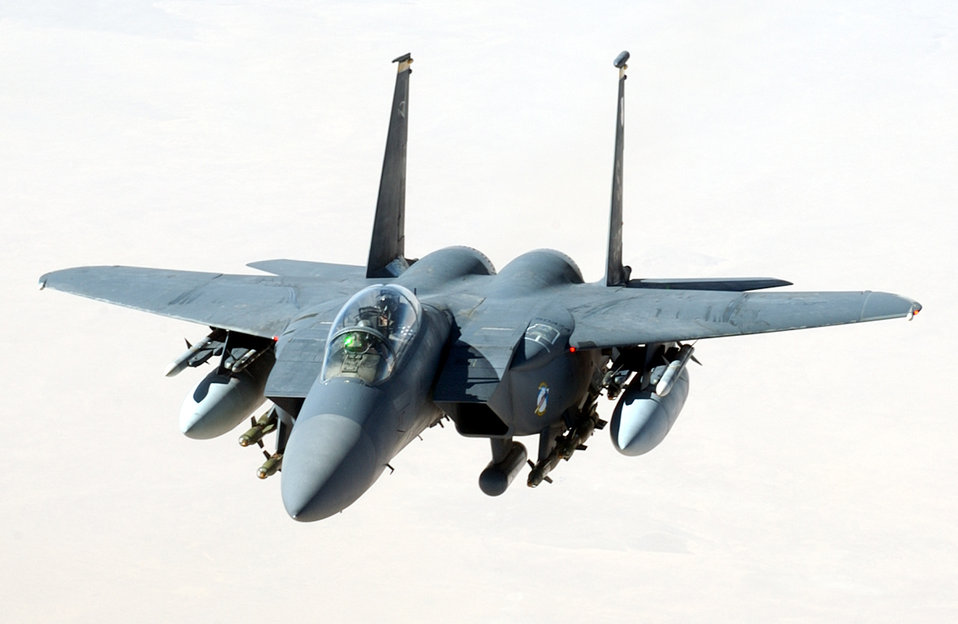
Ruling the skies

OVER IRAQ -- An F-15E Strike Eagle flies through the sky during a combat mission Aug. 16.